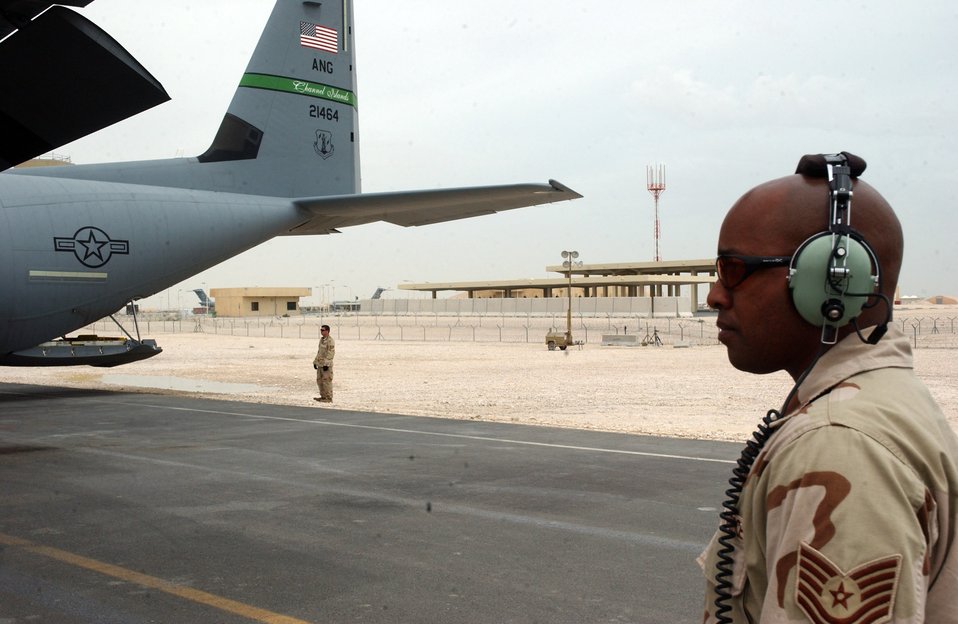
Herc operations

Tech. Sgt. Darrell Williams waits to marshall a C-130J Hercules on the flightline at a deployed location in Southwest Asia on Wednesday, April 5, 2006. Sergeant Williams is with the 747th Aircraft Maintenance Unit.